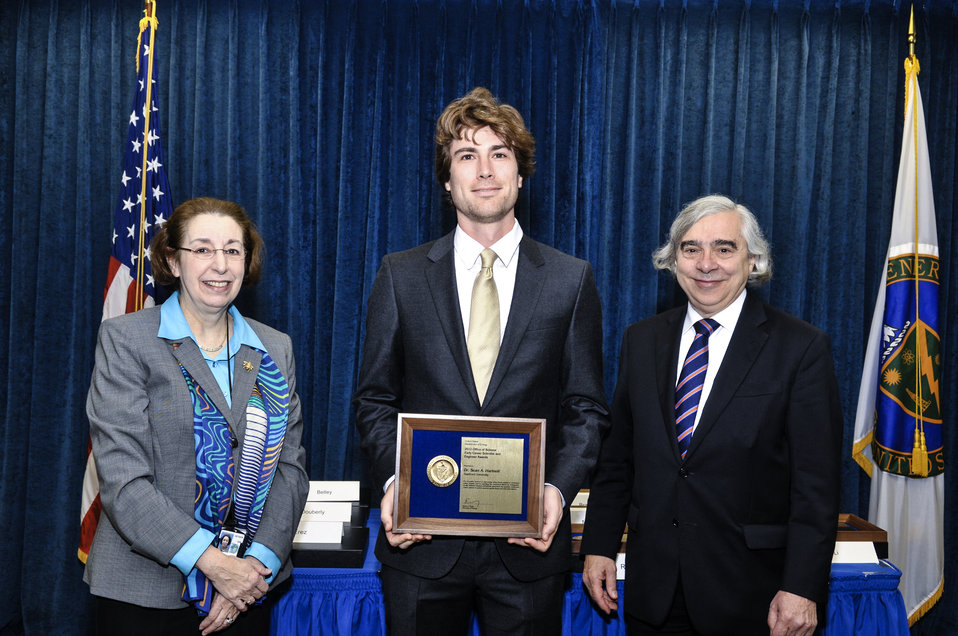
PECASE Awards:DOE Secretary E. Moniz with DOE Office of Science Acting Director Pat Dehmer, PECASE Awardee Sean Hartnoll on April 14, 2014